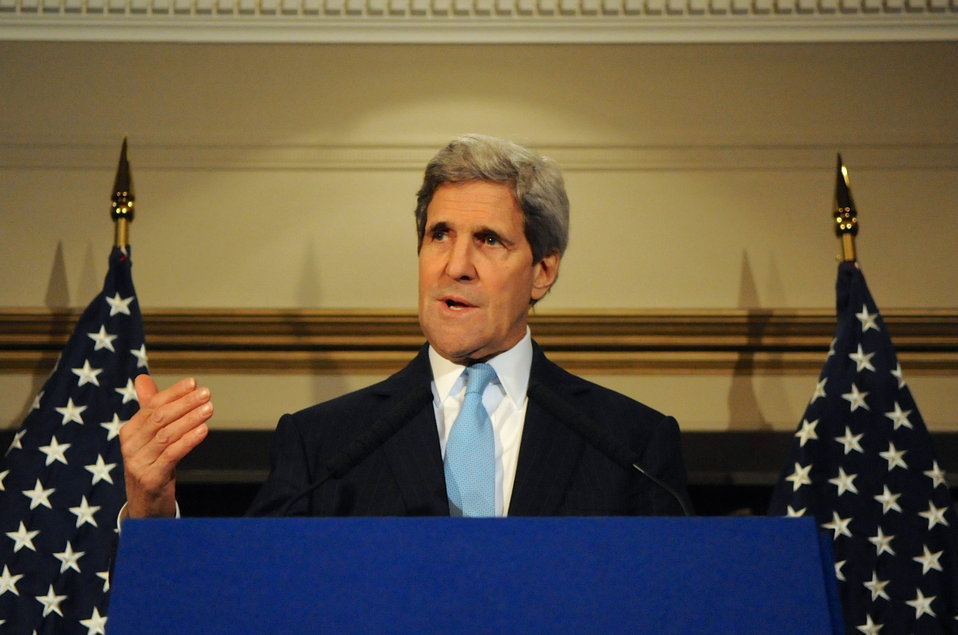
Secretary Kerry Addresses Reporters After Meeting in London With Russian Foreign Minister Lavrov

U.S. Secretary of State John Kerry holds a news conference after a meeting with Russian Foreign Minister Sergey Lavrov focused on deescalating tensions in Ukraine in London, United Kingdom, on March 14, 2014.